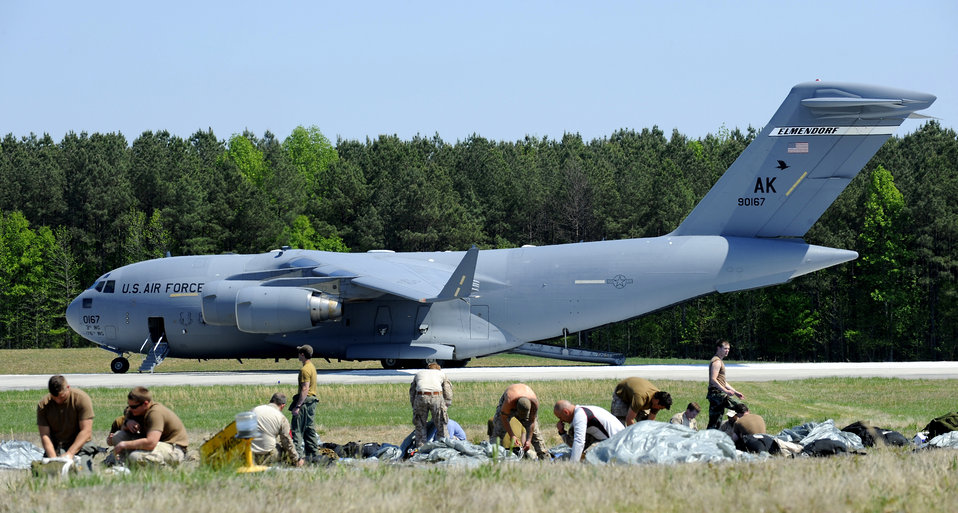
Joint training at 12,500 feet

Navy SEALs repack their parachutes after jumping from a C-17 Globemaster III April 15, 2010, over Fort Pickett Maneuver Training Center, Va. The jump was part of joint training exercise with 517th Airlift Squadron members from Elmendorf Air Force Base, Alaska.